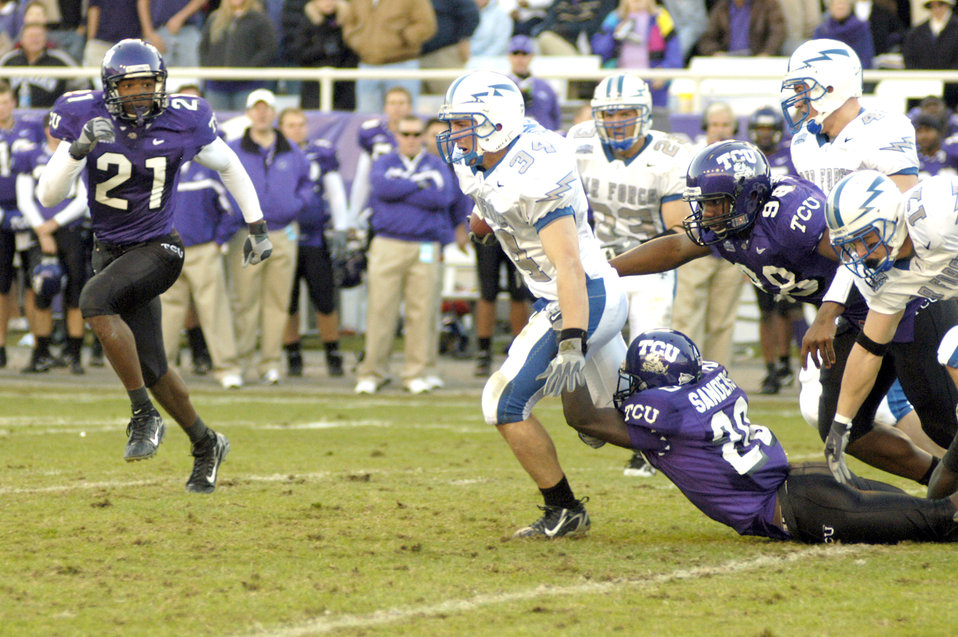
TCU grounds Air Force in season finale

Chris Thomas returns a kick as Texas Christian University defenders Nick Sanders, 20, and Jerry Hughes, 98, close in for the tackle. The Horned Frogs handed the Air Force a 38-14 loss Dec. 2 in Fort Worth, Texas.